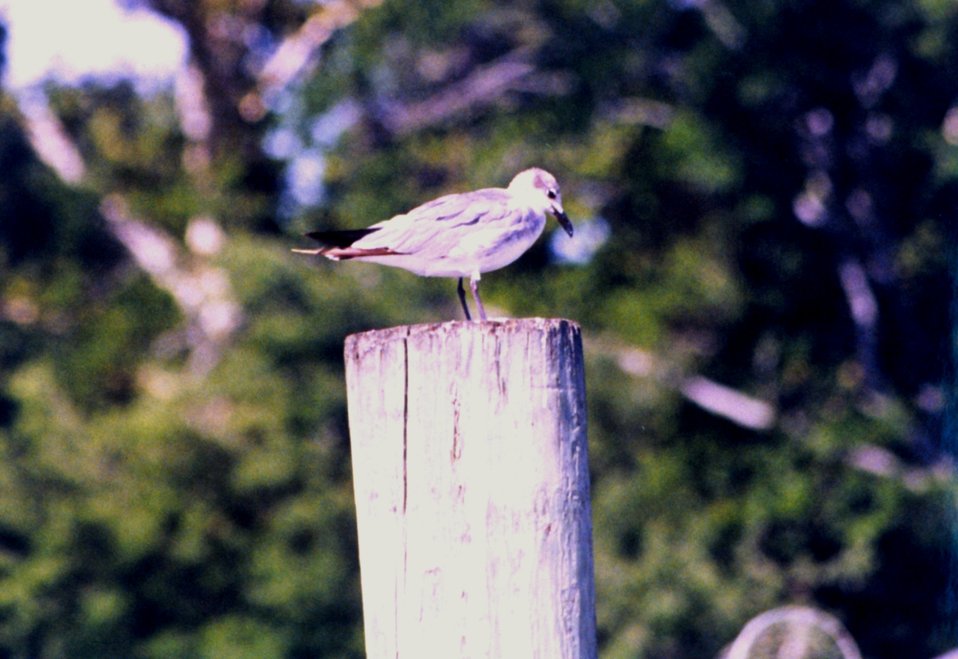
A young Laughing Gull.